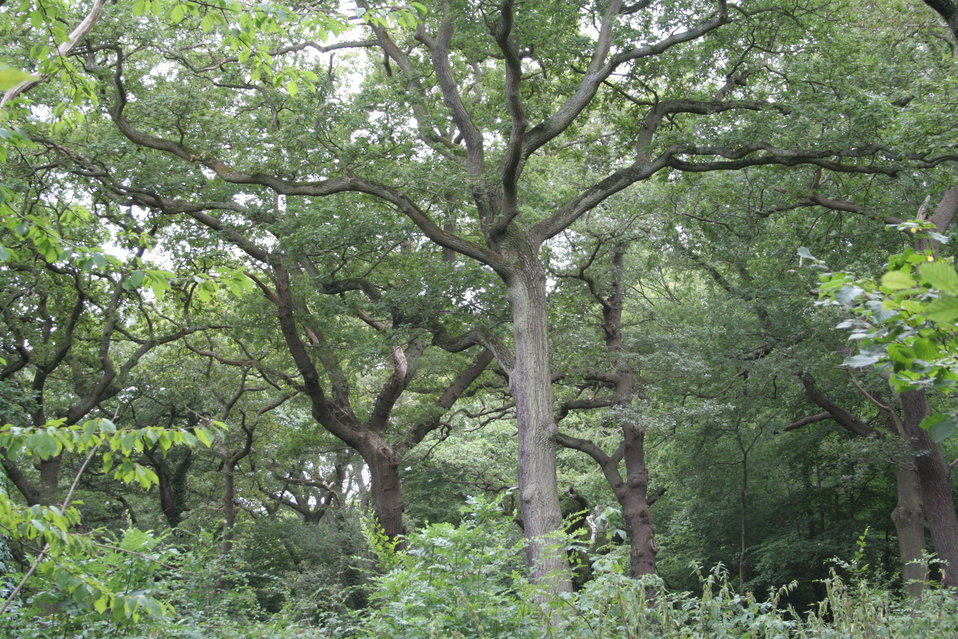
Photograph taken by me on Canon EOS350d in Queen's Wood, Highgate, London, on 29 July 2006 en:Category:Images of London